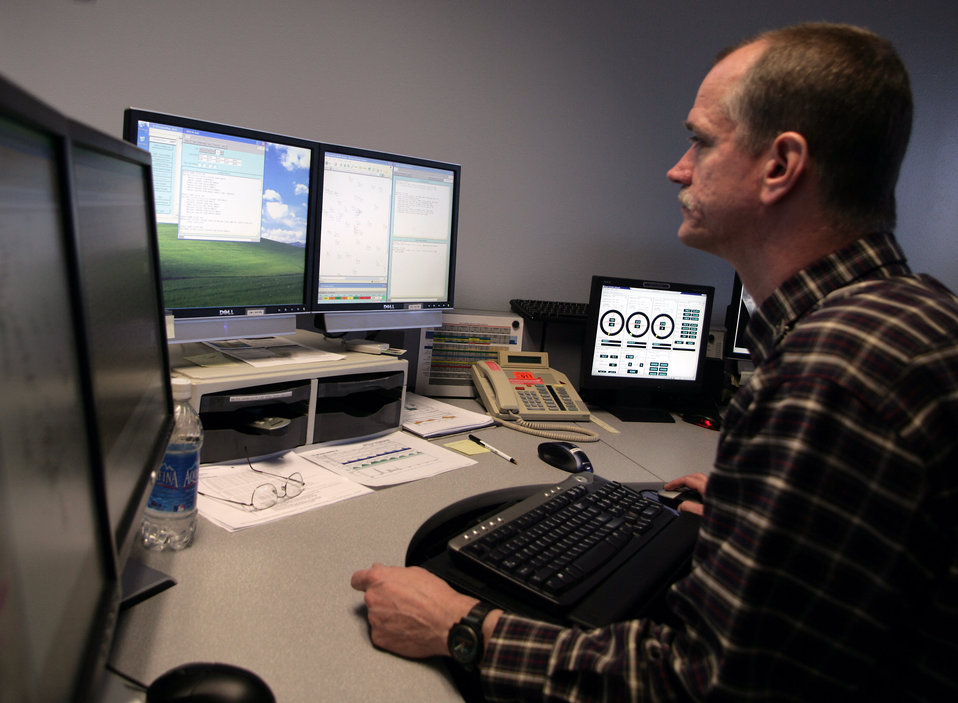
Challenging Air Force weather mission at Academy

Jeff Rosbach, a forecaster with the 306th Operational Support Squadron weather flight at the U.S. Air Force Academy, prepares a mission execution forecast.